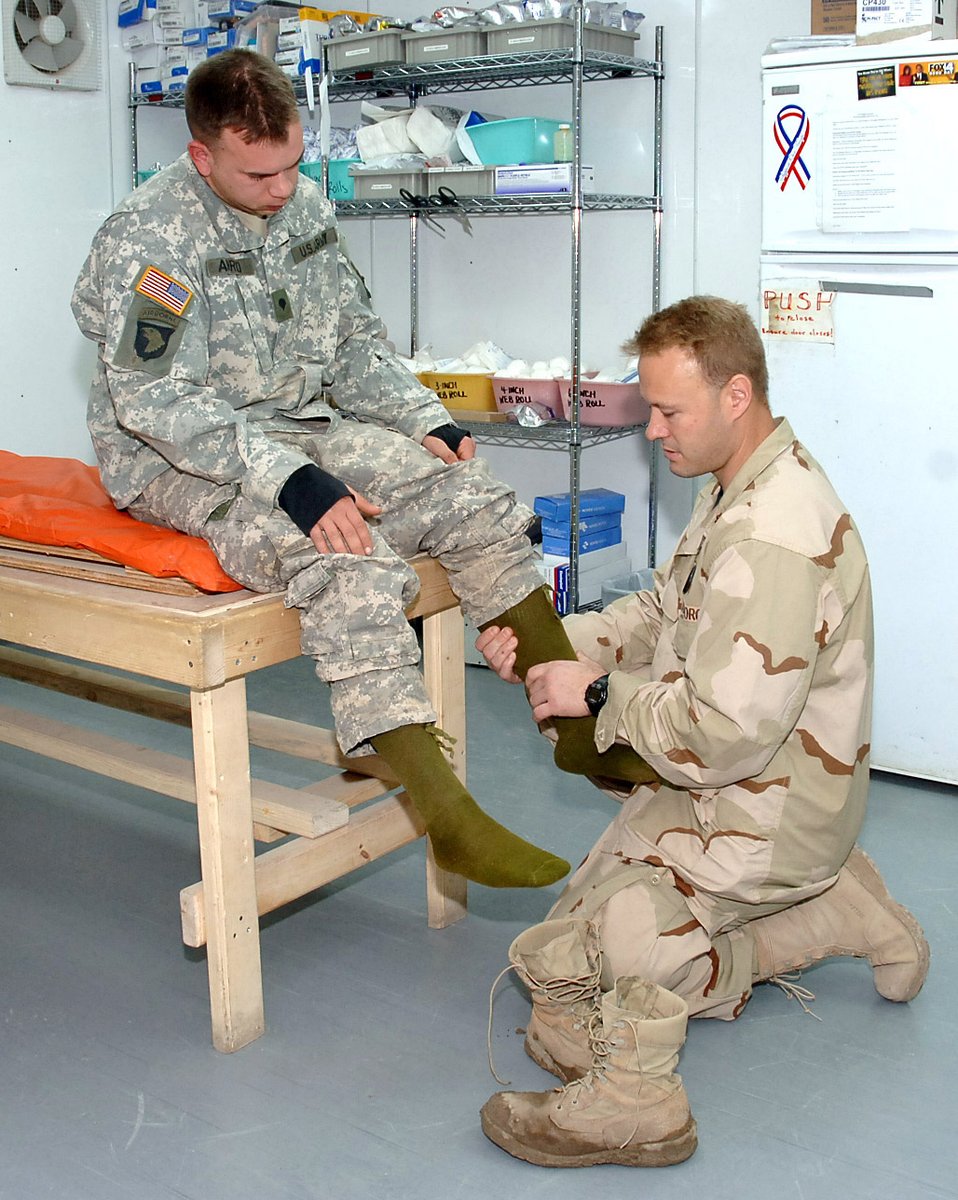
Medics leave dust behind

SATHER AIR BASE, Iraq (AFPN) -- Maj. (Dr.) J.T. Tokish checks Army Specialist Benjamin Arrigo, Headquarters Battalion 1-320, Victory Base Complex, for swelling at the new medical clinic at Sather Air Base. He is an orthopedic surgeon with the 447th Expeditionary Medical Squadron which recently moved from old temper tents to a new 15,000-square foot modular clinic at Sather Air Base, Baghdad International Air Base, Iraq. The new clinic more than doubles the space available to the deployed medical team that provides primary and emergent medical care to Airmen at the air base and also to Department of Defense contractors, U.S. Army and Marines and Iraqi military forces based at the sprawling Victory Base Complex located at BIAP.